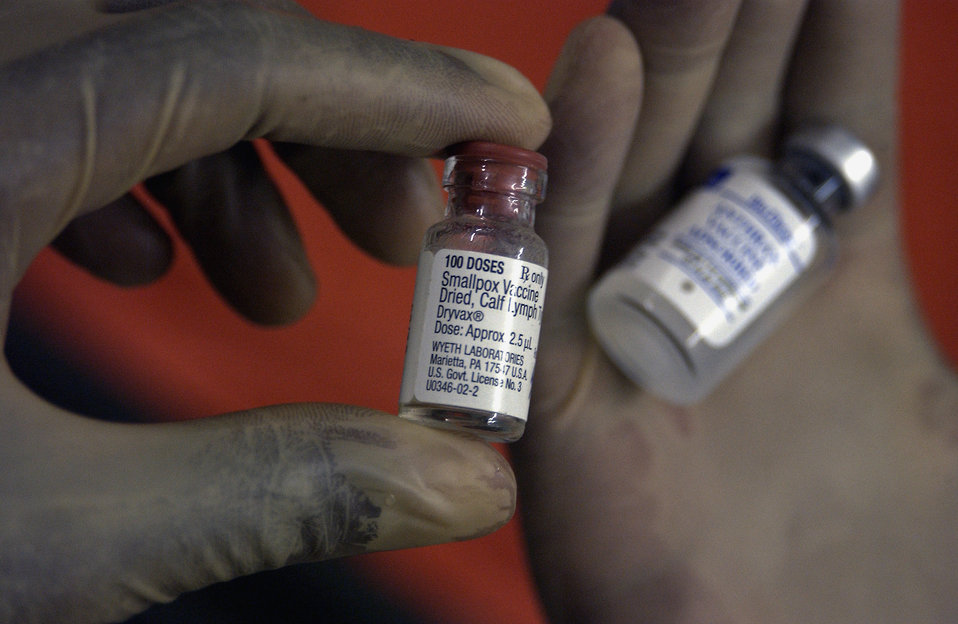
Immunizing airmen

BAGHDAD INTERNATIONAL AIRPORT, Iraq -- Vials of smallpox and anthrax serum are used frequently by members of the 447th Expeditionary Medical Squadron here. Medical technicians inoculate an average of 80 patients per week for smallpox and anthrax.